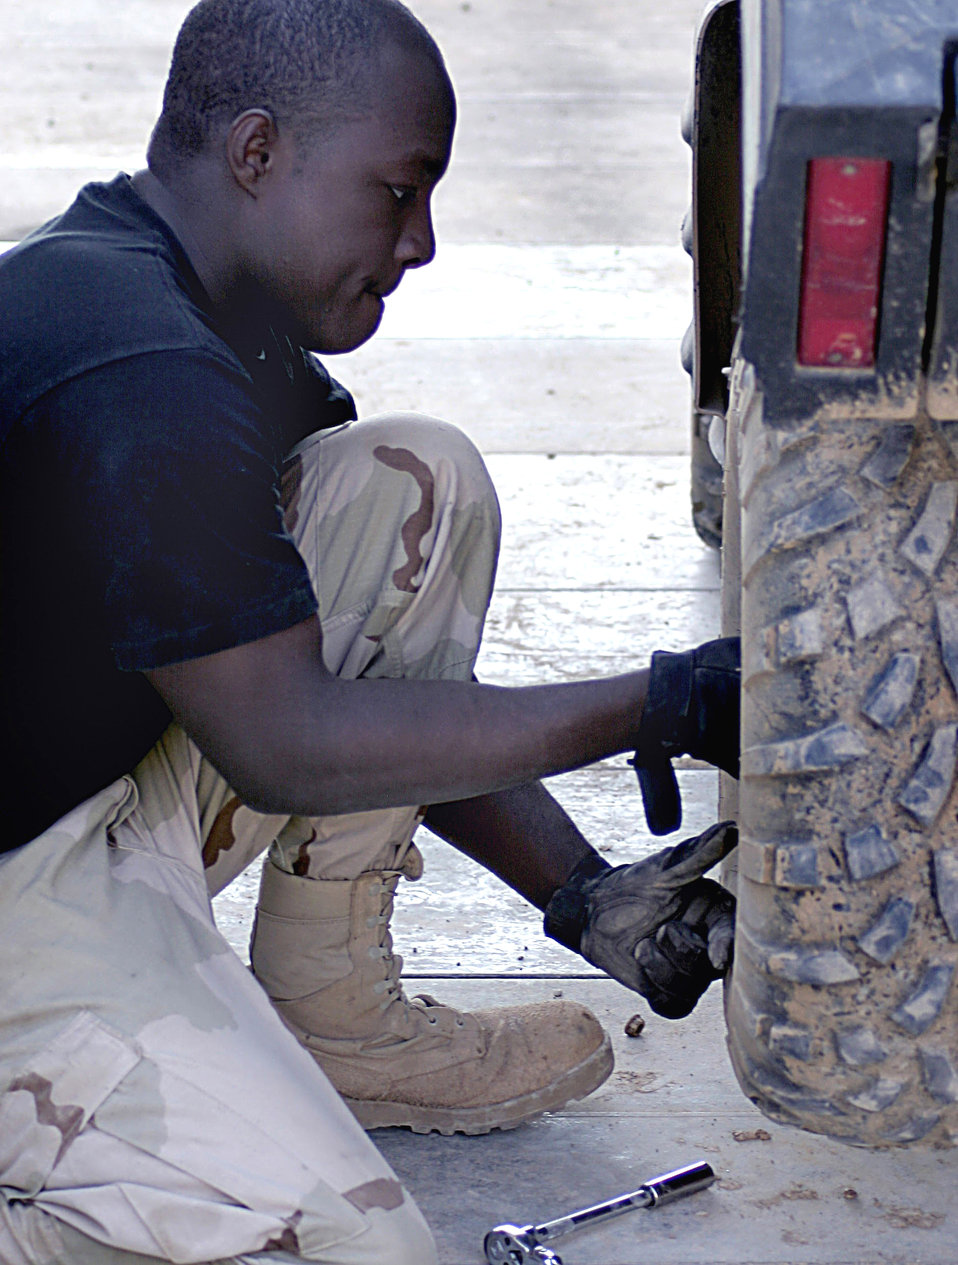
Airmen keep Iraqi airways clear

BALAD AIR BASE, Iraq -- Airman 1st Class Dayson Lee changes a wheel bearing on a vehicle. He is a 727th Expeditionary Airlift Control Squadron vehicle and equipment maintenance journeyman.